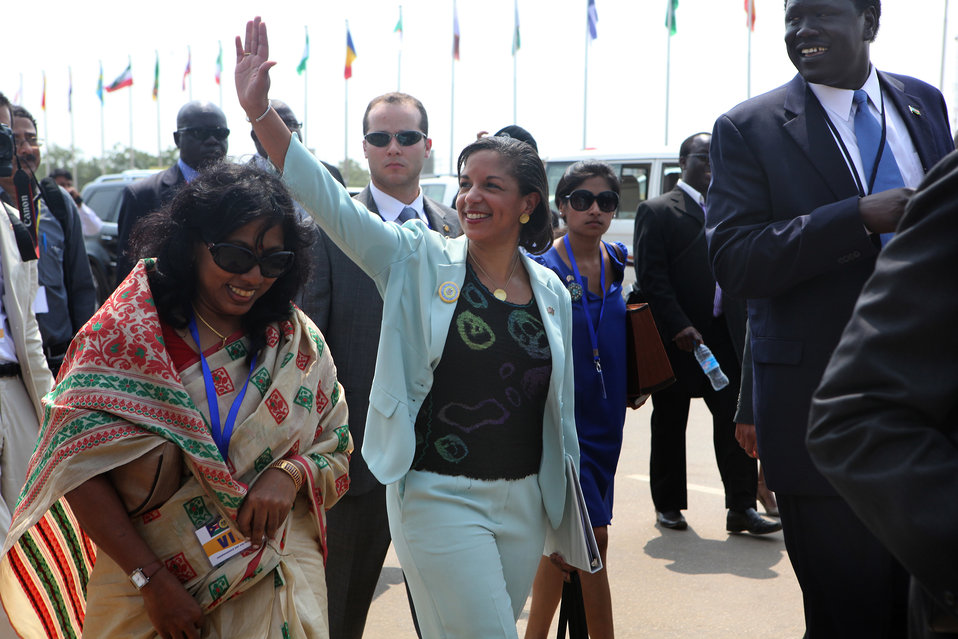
South Sudan Independence Day

Ambassador Susan E. Rice, U.S. Permanent Representative to the United Nations, greets guests at the Republic of South Sudan Independence Day celebrations in Juba, South Sudan on July 9, 2011.